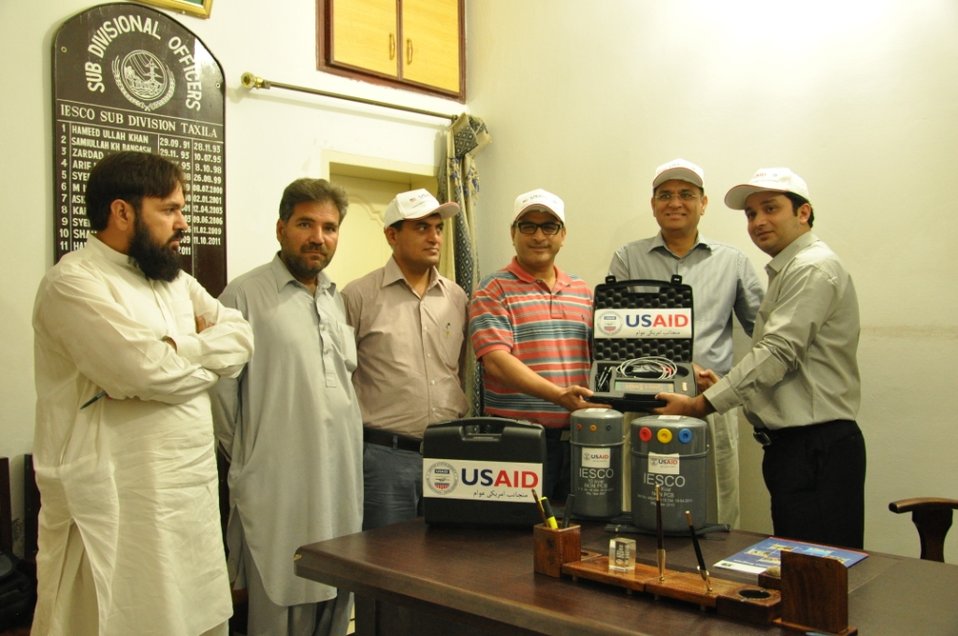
Usaid To Provide Technical Assistance To Improve Efficiency Of Tube-Wells In Iesco By Installing 2600 Lt Capacitors at Islamabad on April 26, 2012